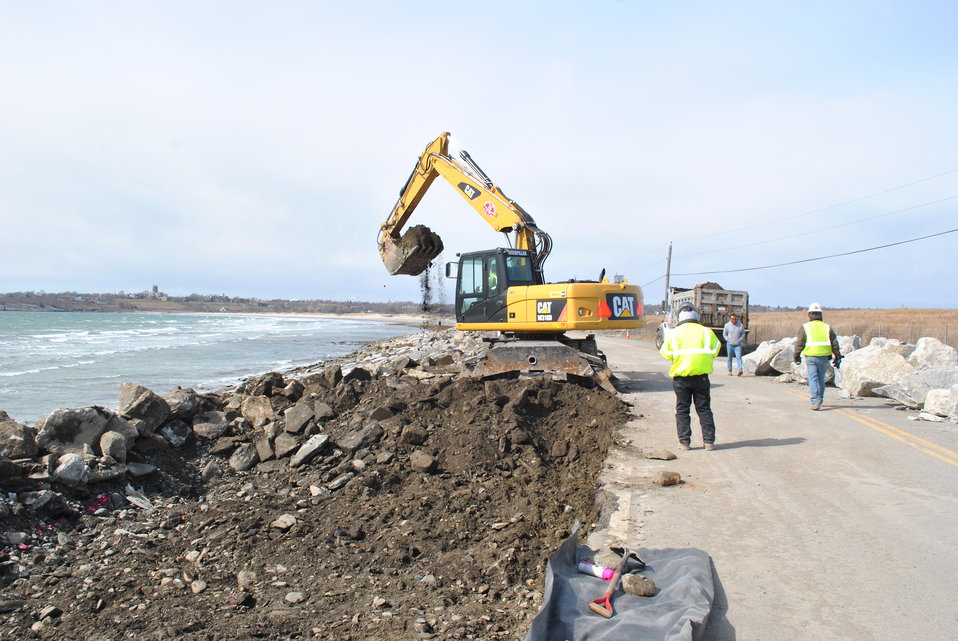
Repairs begin at Sachuest Point Road (RI)

Construction work has begun on the public road that leads to Sachuest Point National Wildlife Refuge. The Rhode Island Department of Transportation is rebuilding about 1,500 feet of Sachuest Point Road and providing armor stone to protect the road from further erosion during storm surges with high surf. The Service and the Federal Highway Administration are funding the repairs, which are expected to be complete in May.